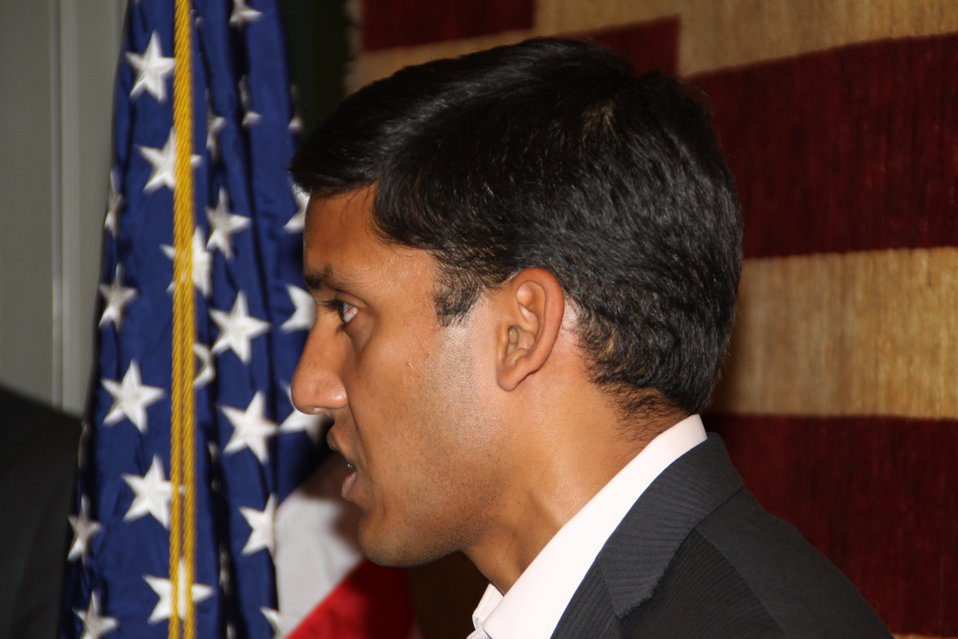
US Embassy Town Hall July 21, 2010